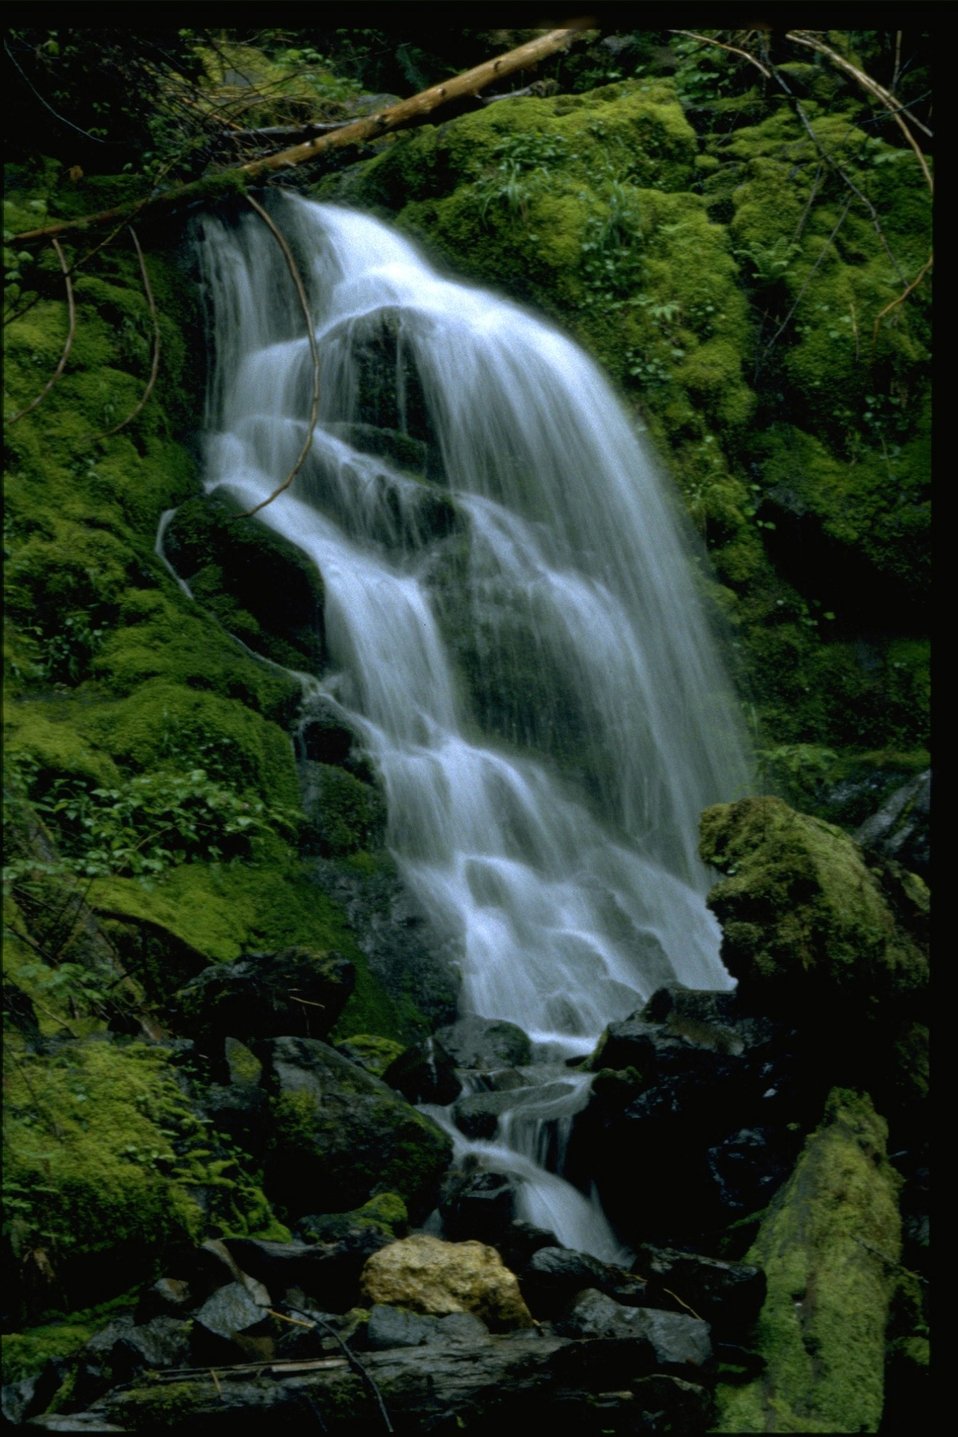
Swiftwater stream.